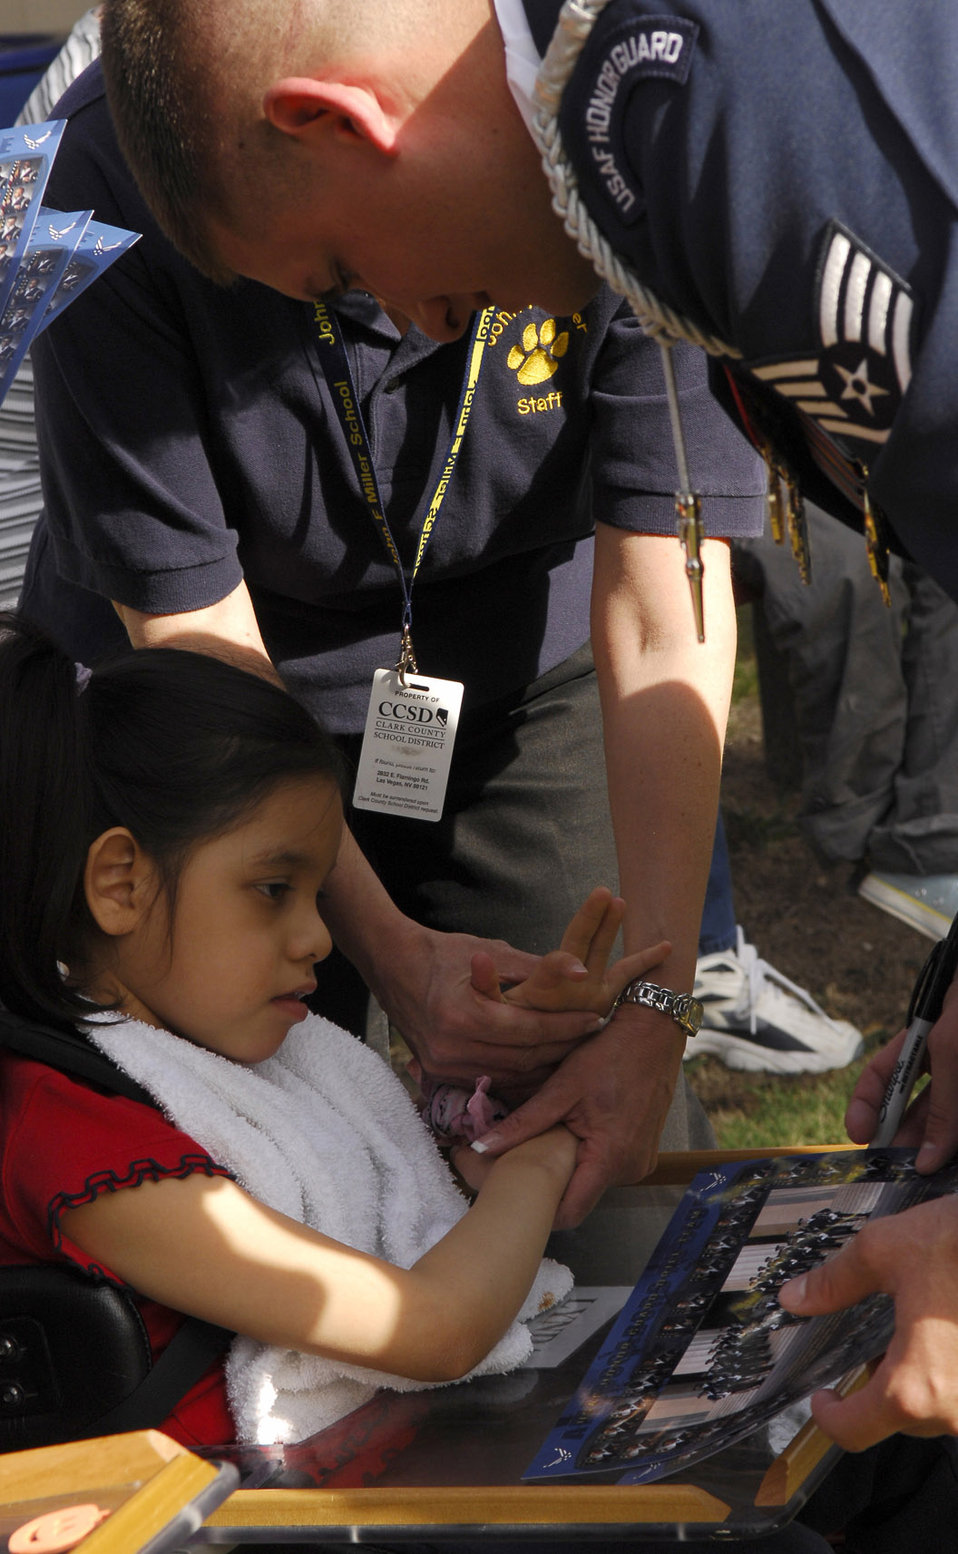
Honor Guard drill team performs for special-needs students

Staff Sgt. Michael Doss signs an autograph for a student at the John F. Miller School for Special Needs Nov. 8 in Las Vegas. Sergeant Doss is an Air Force Honor Guard drill team member. The drill team planned a special performance for the students at the school during their visit to the city and Nellis Air Force Base, Nev., for the final week of the Air Force's 60th Anniversary celebrations.